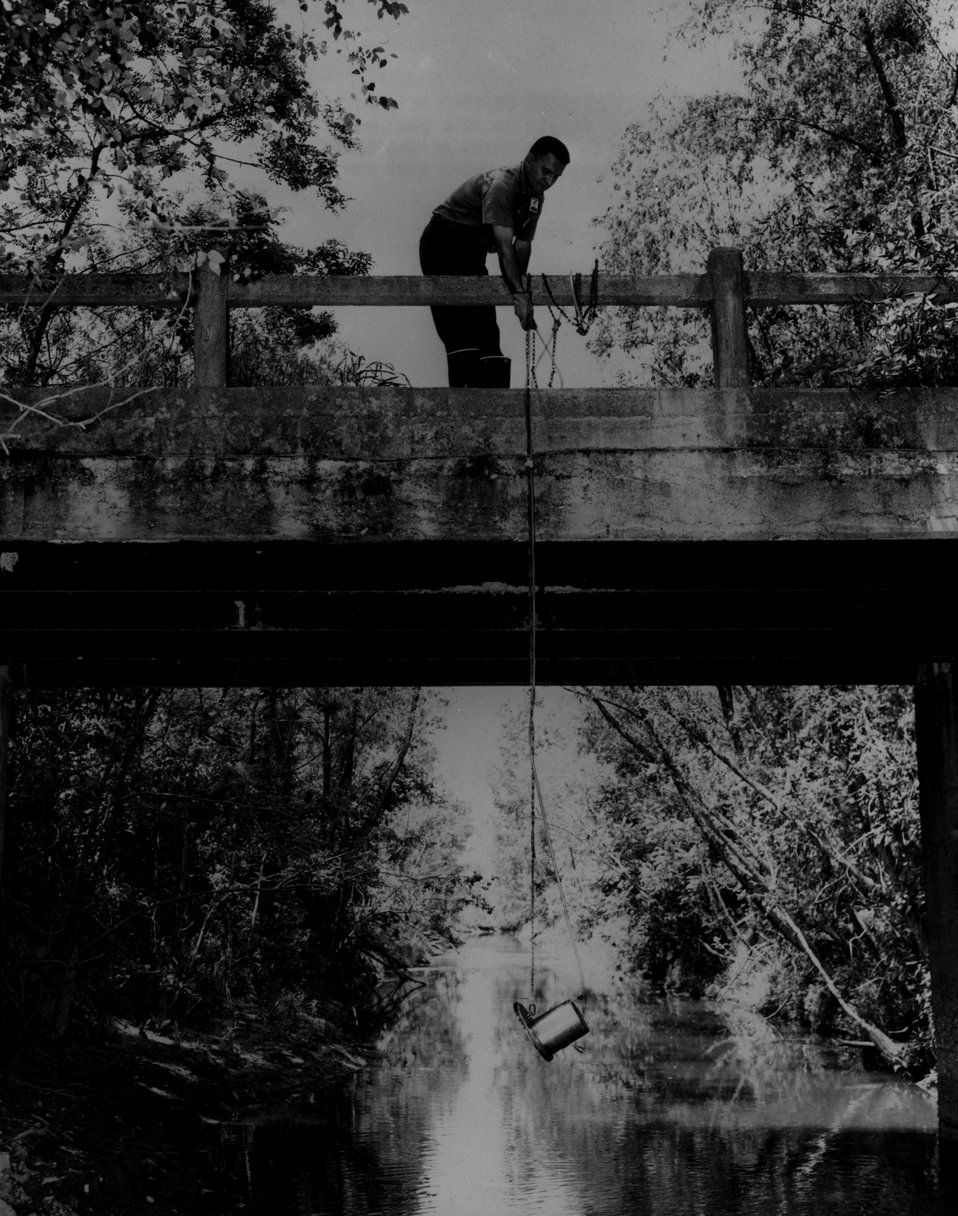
Pollution control starts with small tributaries. Simple gravity-powered device developed at the Paducah Plant automatically obtains continuous sample integrated over one week. c. 1967